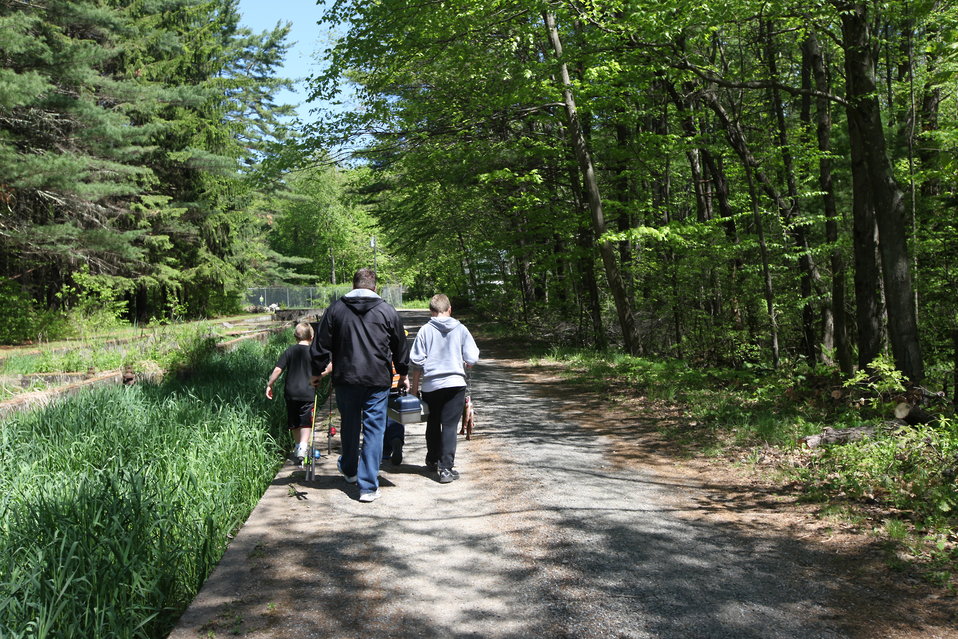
Youth Fishing Derby 2012

Megan Nagel/USFWS